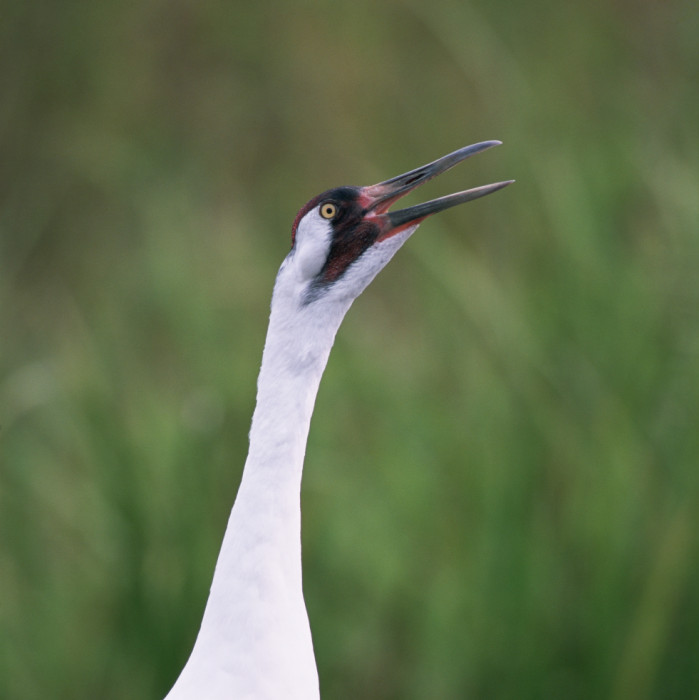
Whooping crane calling.